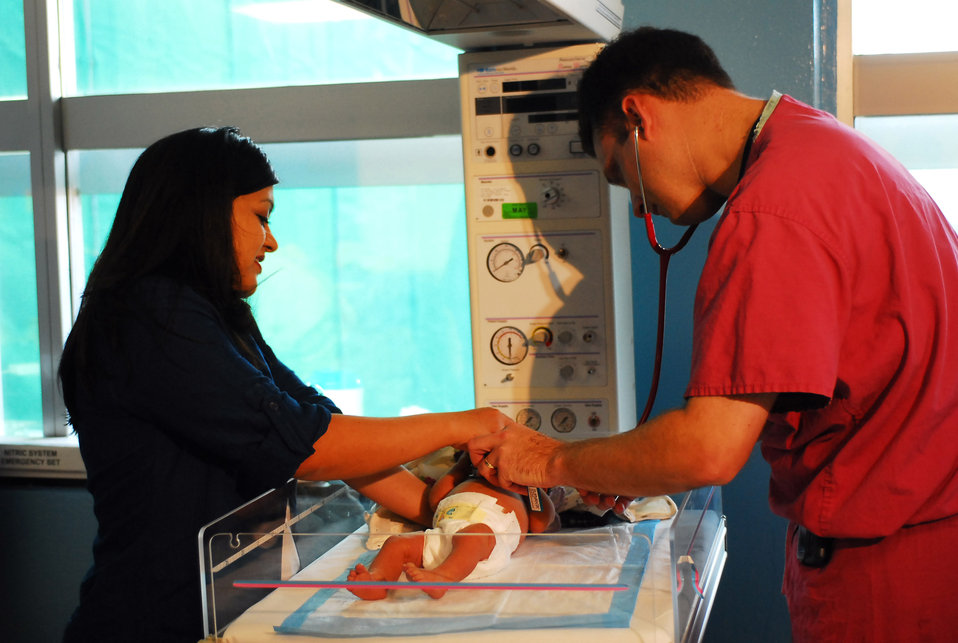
Okinawa Naval hospital unit has Air Force ties

Mari Nash helps Maj. (Dr.) Jay Kerecman checks her daughter, Mia, after she was hospitalized for a blood disorder immediately after birth. Baby Mia made a full recovery after receiving care from the Neonatal Intensive Care Unit staff. Ms. Nash is the wife of Lt. Col. Christopher Nash of the 3rd Marine Expeditionary Forces, and Major Kerecman is an 18th Medical Operations Squadron NICU staff neonatologist.